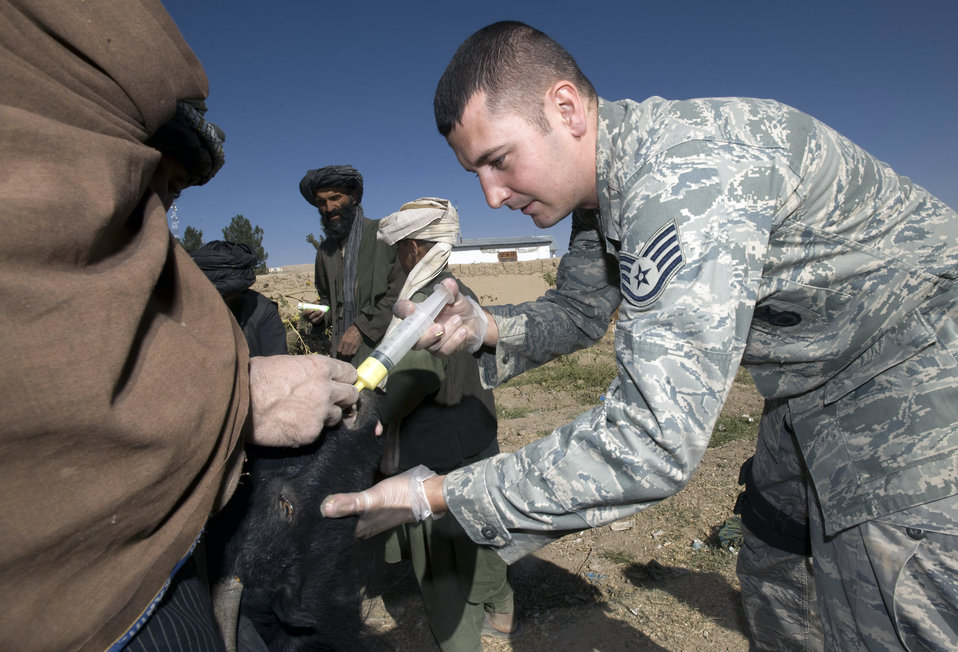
Veterinary care helps build relations with nomadic tribe

Staff Sgt. Don Elias deworms livestock during a veterinary medical outreach conducted by the Zabul Provincial Reconstruction Team Oct. 17 in Qalat, Afghanistan. The PRT members offered free deworming and vitamin supplements. Sergeant Elias, a native of Buffalo, N.Y., is deployed from Wright-Patterson Air Force Base, Ohio.